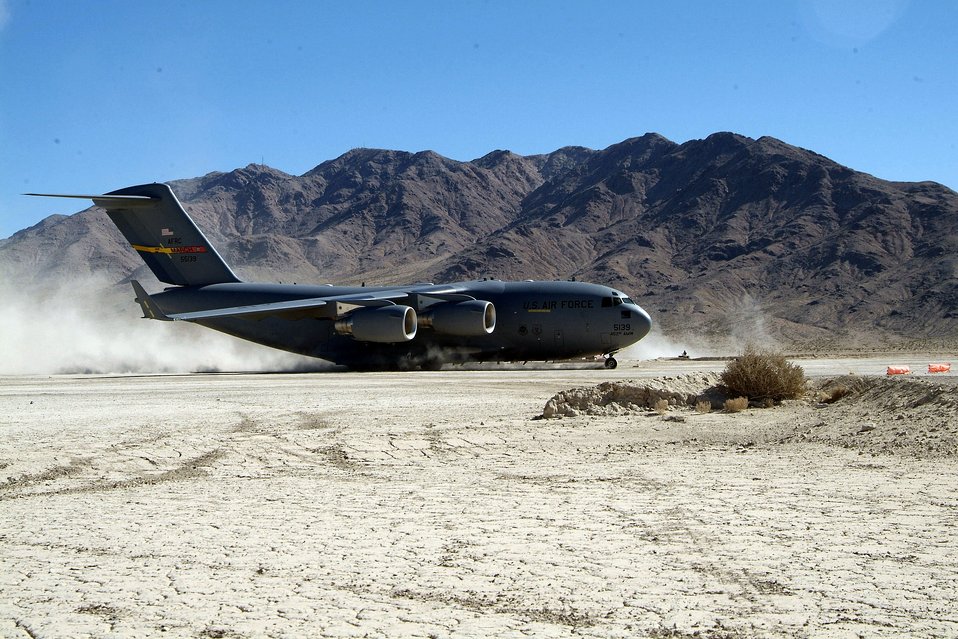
Landed

FORT IRWIN, Calif. (AFPN) -- A C-17 Globemaster III comes to a stop after landing on the dirt runway Feb 10. The aircraft is from March Air Reserve Base, Calif.